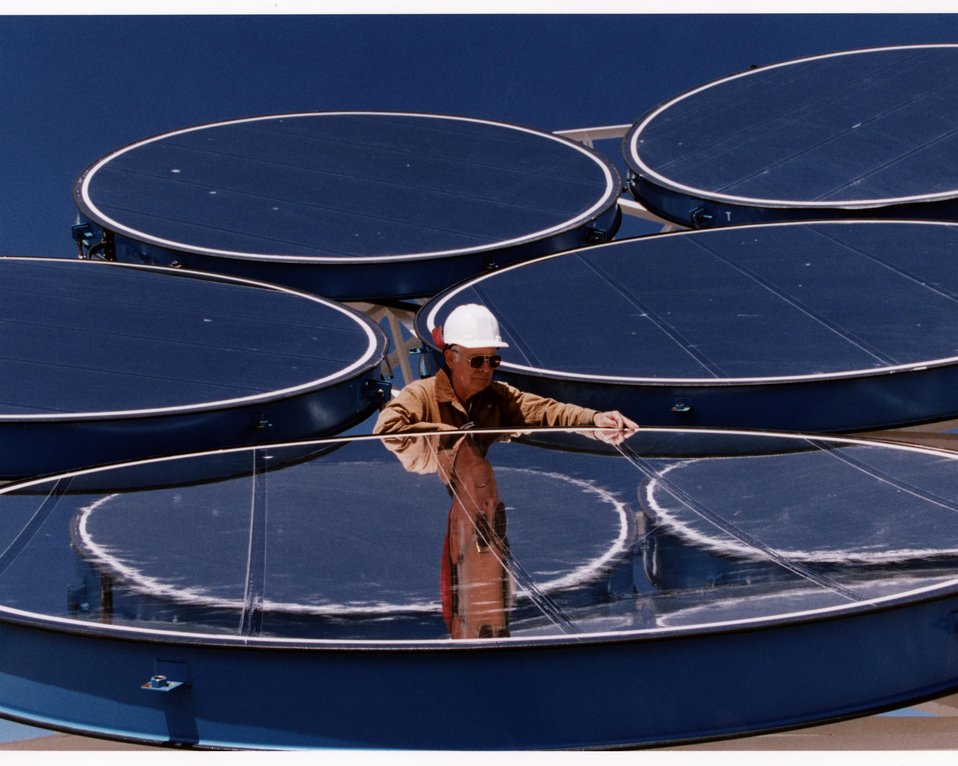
MULTI-FACETED STRETCHED MEMBRANE HEMOSTAT UNDERGOES CHECK OF ITS SKIN.

SANDIA NATIONAL LABORATORIES IS CONDUCTING TESTS ON STRETCHED MEMBRANE HEMOSTATS AT ITS SOLAR THERMAL TEST FACILITY. HEMOSTATS ARE USED TO REFLECT SUNLIGHT TO A CENTRAL BOILER OR THERMAL RECEIVER, WHICH IS IN TURN USED TO GENERATE ELECTRIC POWER.